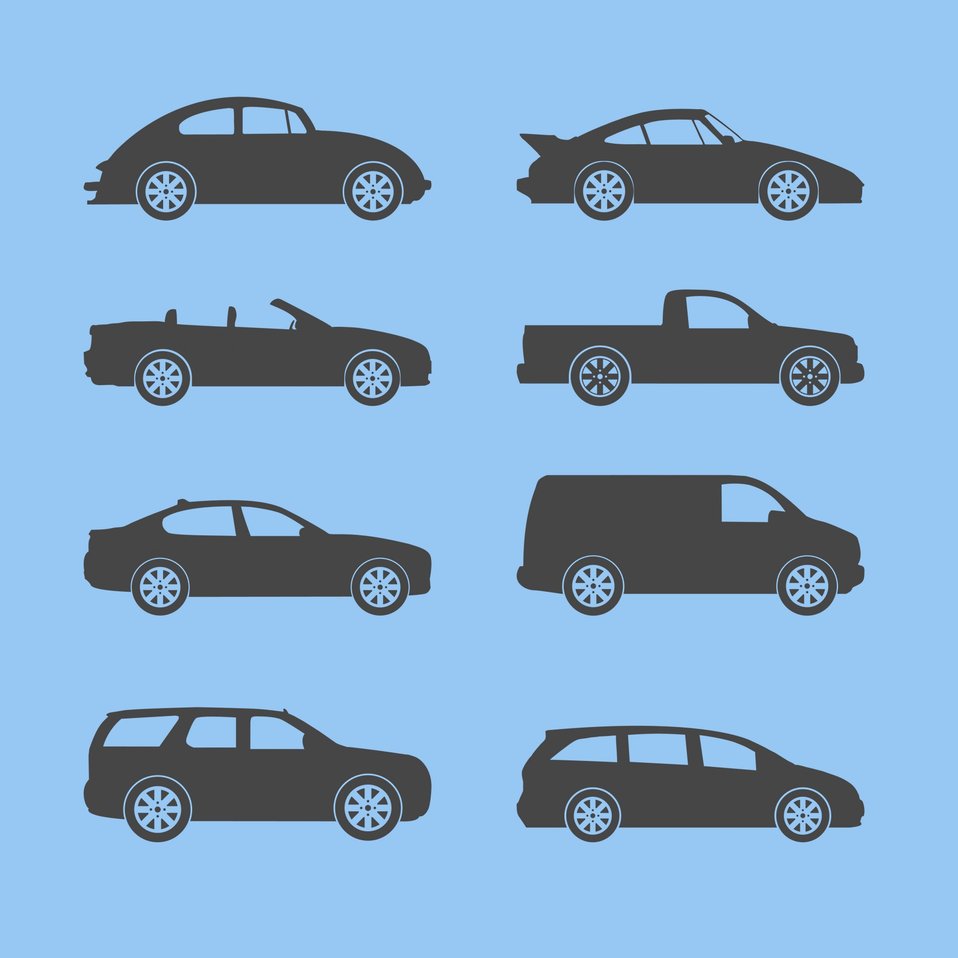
Vehicle silhouettes icons

A number of vehicles silhouettes including a minivan, an suv, a pickup truck, a van, a sports car and the vw beetle.